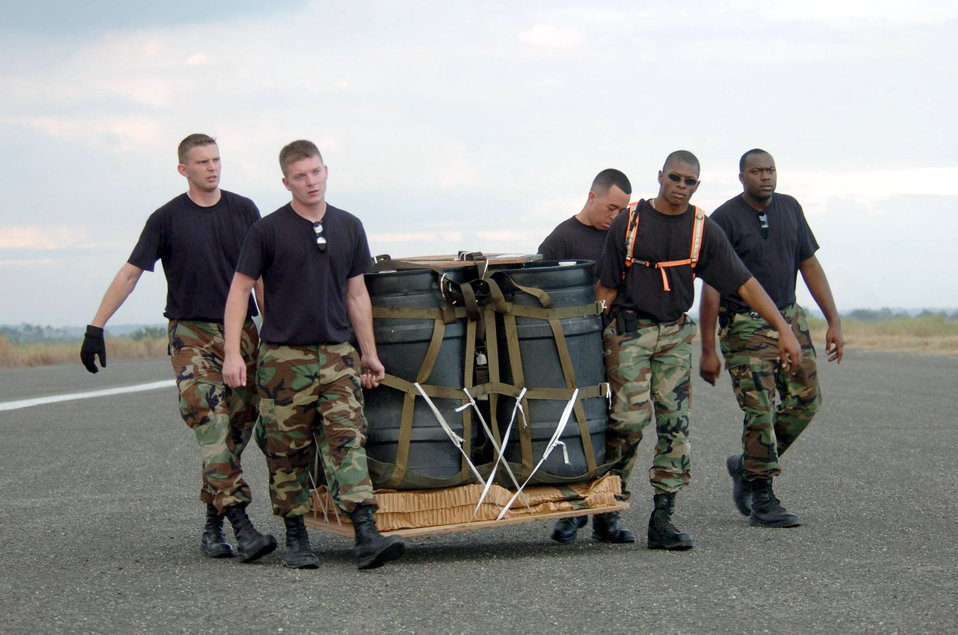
Balikatan 2004

BASA AIR BASE, Philippines -- Airmen move a container delivery system after it landed at a drop zone during low-altitude airdrop training here Feb. 25 during Balikatan 2004. The airmen are part of the 18th Logistics Readiness Squadron's combat mobility element from Kadena Air Base, Japan. Balikatan is an annual bilateral exercise that demonstrates U.S. resolve and commitment to train, advise and assist the Philippine government.